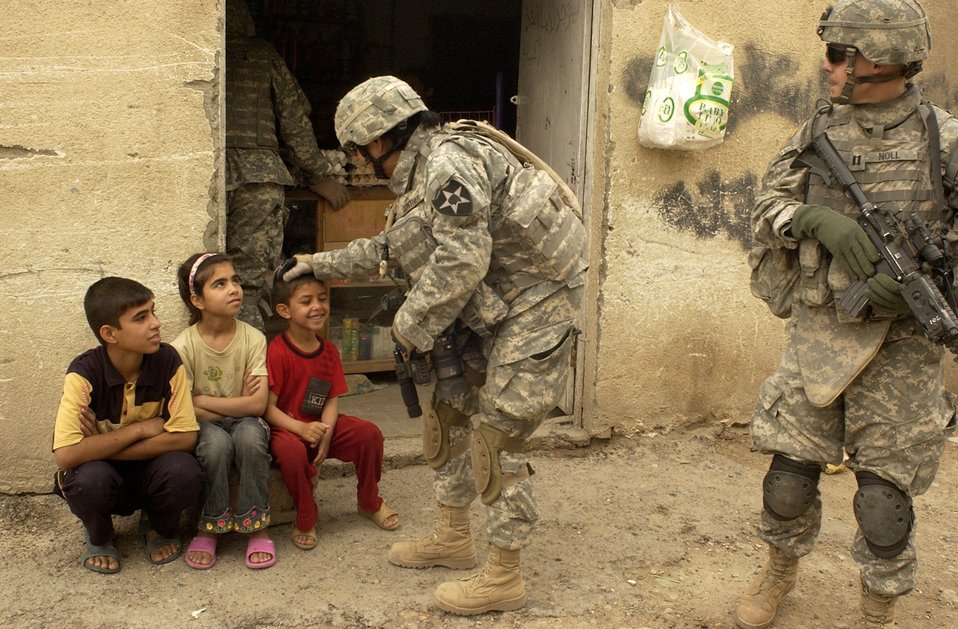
Extending the hand of friendship

Master Sgt. Coco Gunther takes a break from videotaping and documenting a search being conducted by U.S. Army Soldiers in Rashid, Iraq, May 3 to greet several Iraqi children. Sergeant Gunther is deployed from the 1st Combat Camera Squadron, Charleston Air Force Base, S.C.